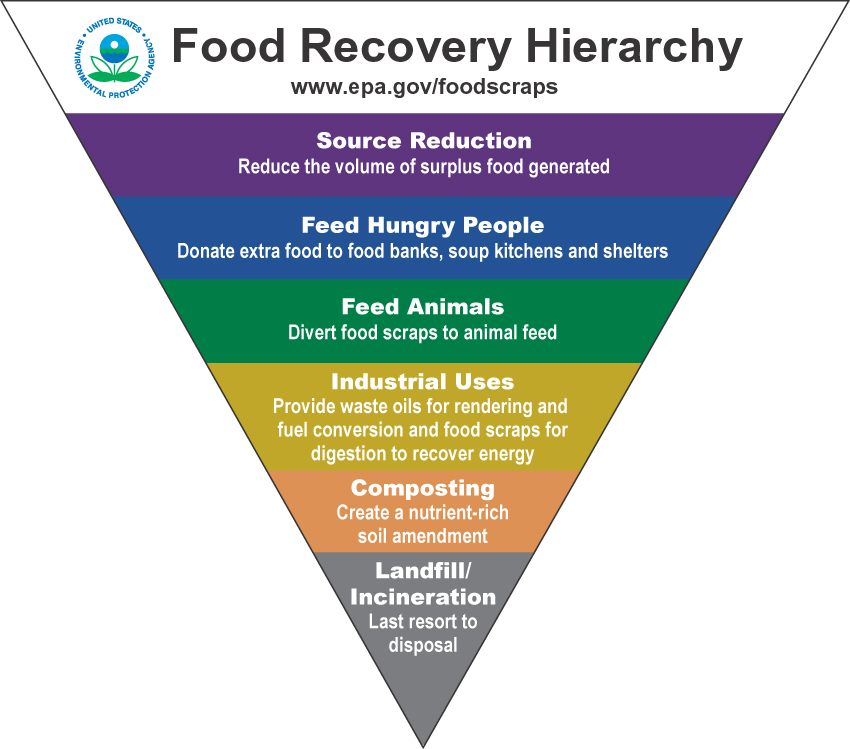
Food Waste Can Be A Valuable Resource

By putting food waste into a landfill, we are wasting a valuable resource. When properly processed, food scraps can generate renewable energy, enhance the soil as a fertilizer, and feed animals.